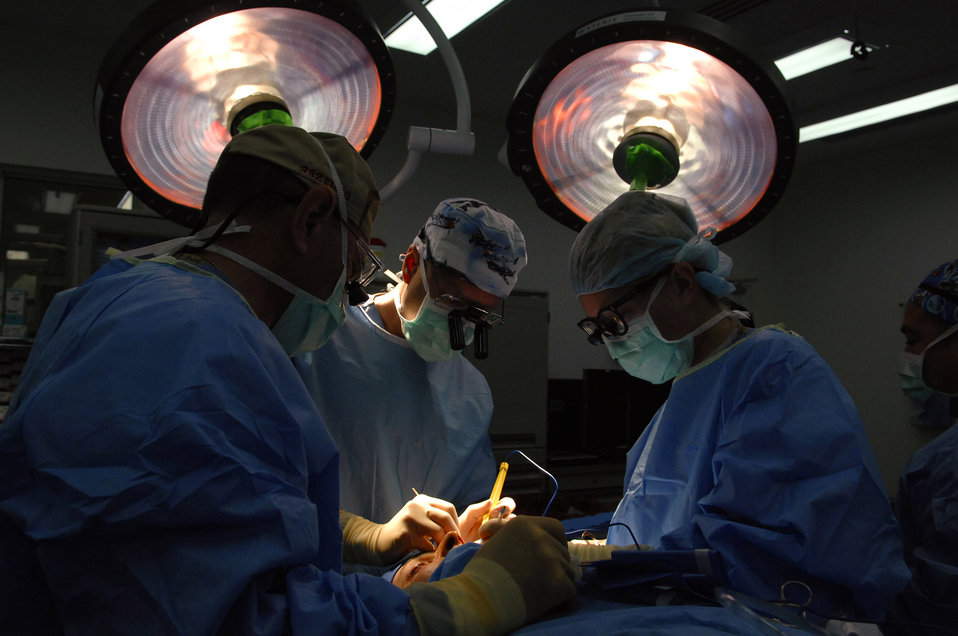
Eye doctors give patients new outlook

Col. (Dr.) Randall Beatty operates July 10 on a trauma patient here who sustained extensive eye injures during a combat operation in Iraq. Colonel Beatty is a 332nd Expeditionary Medical Operations Squadron ophthalmologist and orbital oculoplastics specialist.